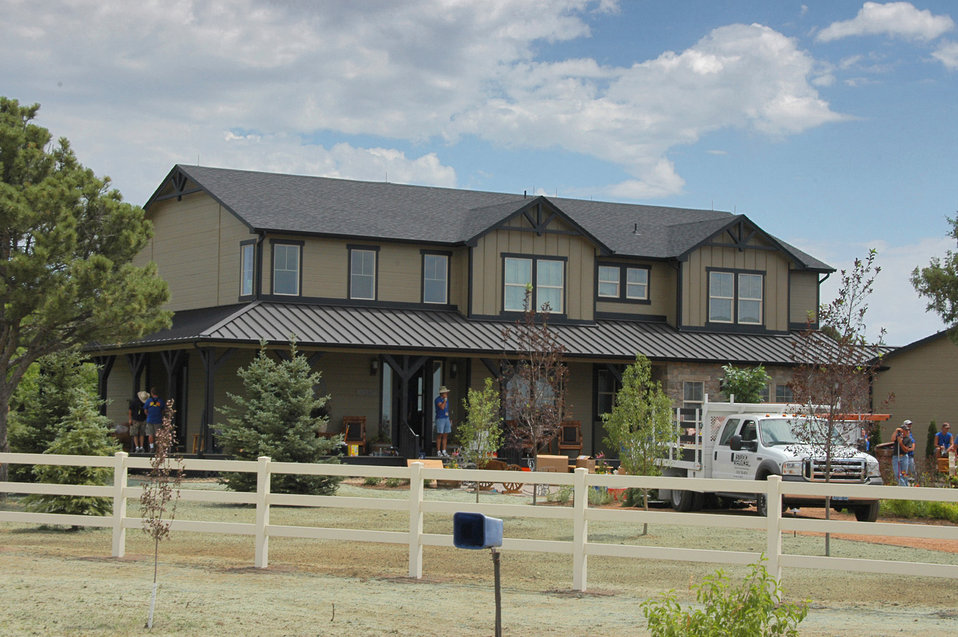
Home Makeover

PEYTON, Colo. -- The new 4,000-square-foot residence of Billy Jack and Anne Barrett, along with their six children sits on the site of their old home. The Barretts' old home was redesigned for them by the ABC television network's